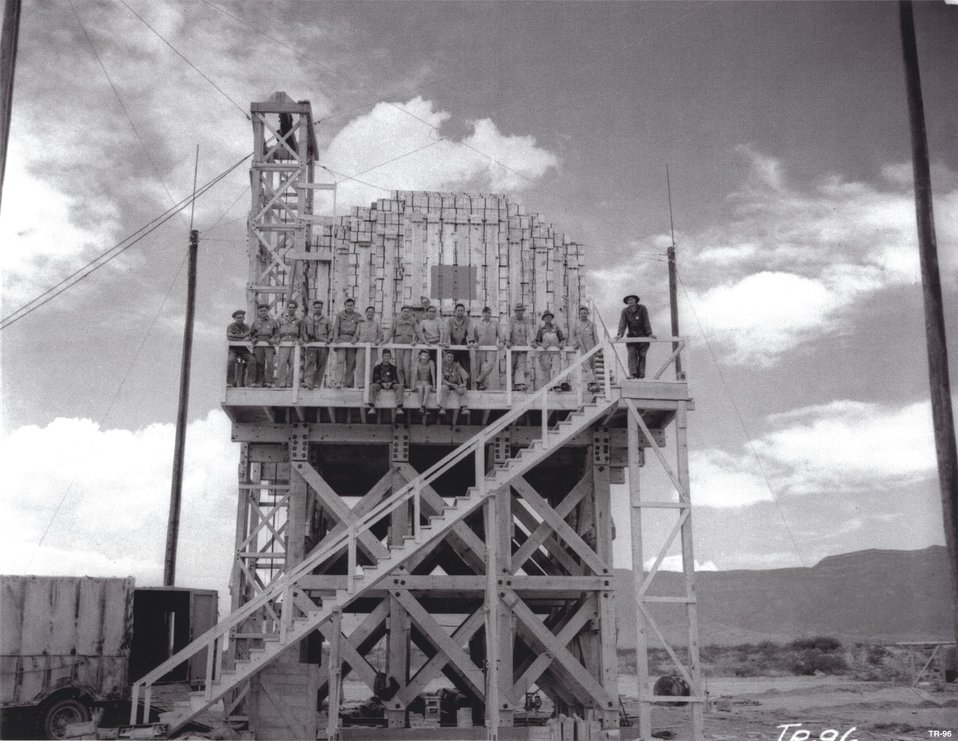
Trinity tower